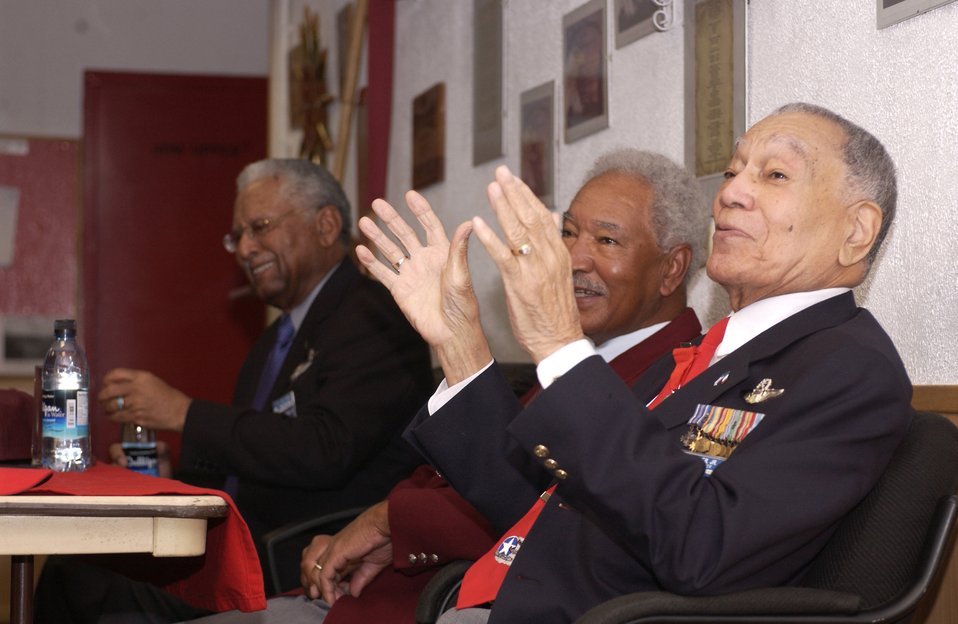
Tuskegee Airmen visit Spangdahlem

SPANGDAHLEM AIR BASE, Germany (AFPN) -- Retired Lieutenant Colonels (right to left) Lee Archer, Robert Ashby and Asa Herring, members of the original Tuskegee Airmen, visit the 52nd Aircraft Maintenance Squadron. The Tuskegee Airmen visited the base Feb. 21 as part of the celebration of African-American History Month.